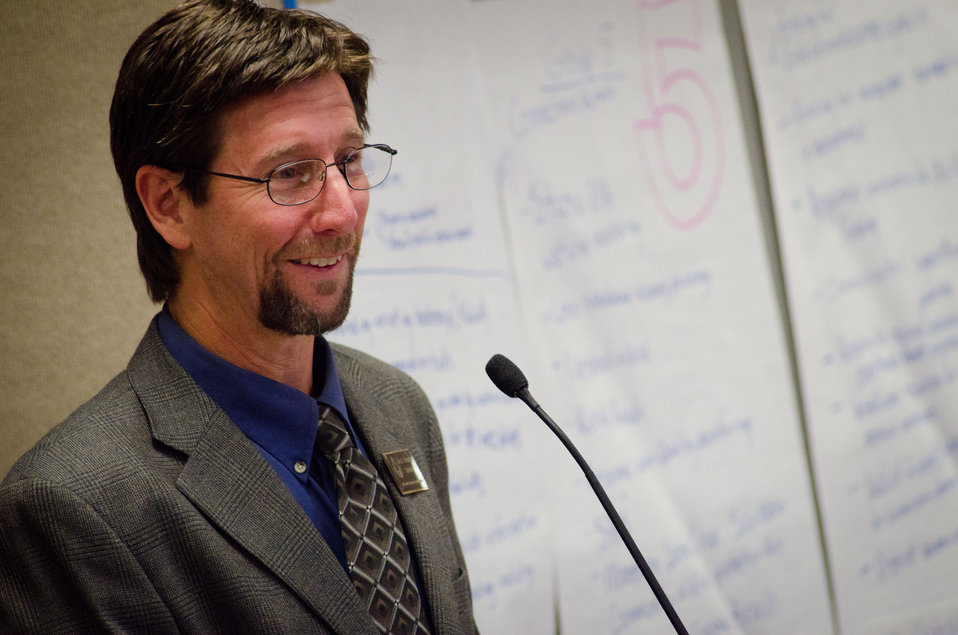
U.S. Department of Agriculture Natural Resources Conservation Service Assistant State Conservationist Daniel Mountjoy comments about feedback on wall behind him during the America’s Great Outdoors Initiative (AGO) Monterey Bay Pilot Area Focus Session in the City of Watsonville’s Civic Plaza in California, on Friday, June 17, 2011. Federal and state resource management agencies came together to identify partnership opportunities and determine actions for protection and enhancement of water quality and publicize voluntary stewardship and collective regulatory planning in the watersheds that drain into the Monterey Bay National Marine Sanctuary. This area includes the counties of San Mateo, Santa Cruz, Santa Clara, San Benito, Monterey, and San Luis Obispo. Key questions identified existing multi-county or multi land use partnerships; what is not being done; possible partnerships - collective resources to maximize the benefits to natural resources and communities; and additional resources that organizations can bring to maximize AGO. President Barack Obama signed the initiative on April 16, 2010 to develop a 21st Century conservation and recreation agenda.